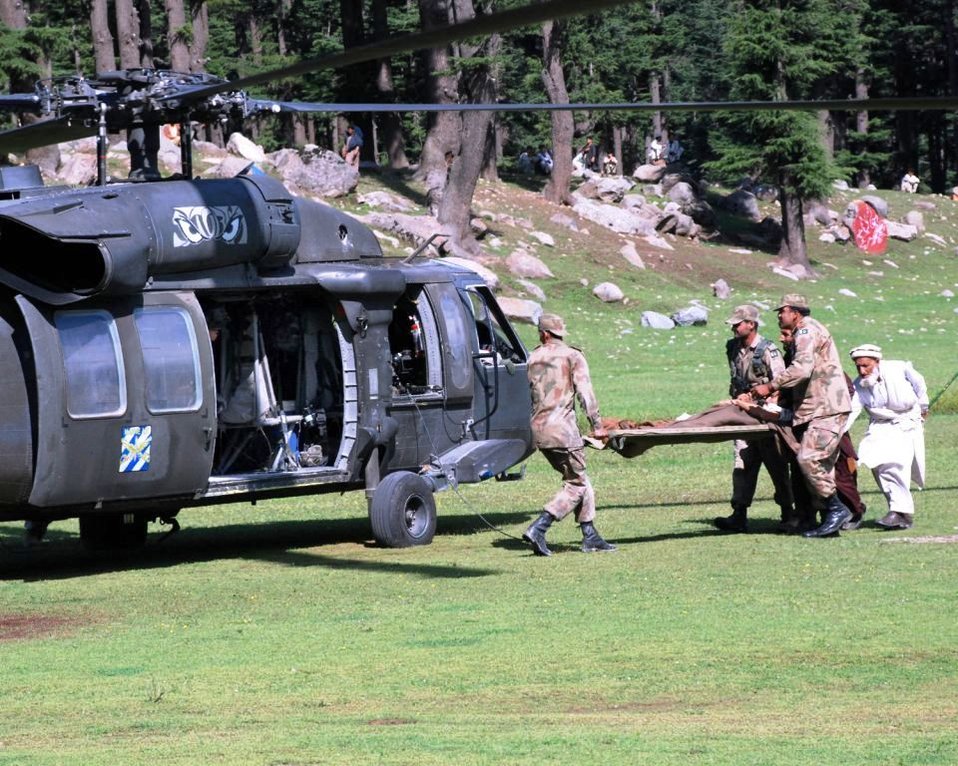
Pakistan Military Load a Flood Victim on a Helicopter

Pakistan military load a flood victim with a broken leg onto a Black Hawk helicopter during flood relief missions in the Swat valley, Pakistan, on August 10, 2010.